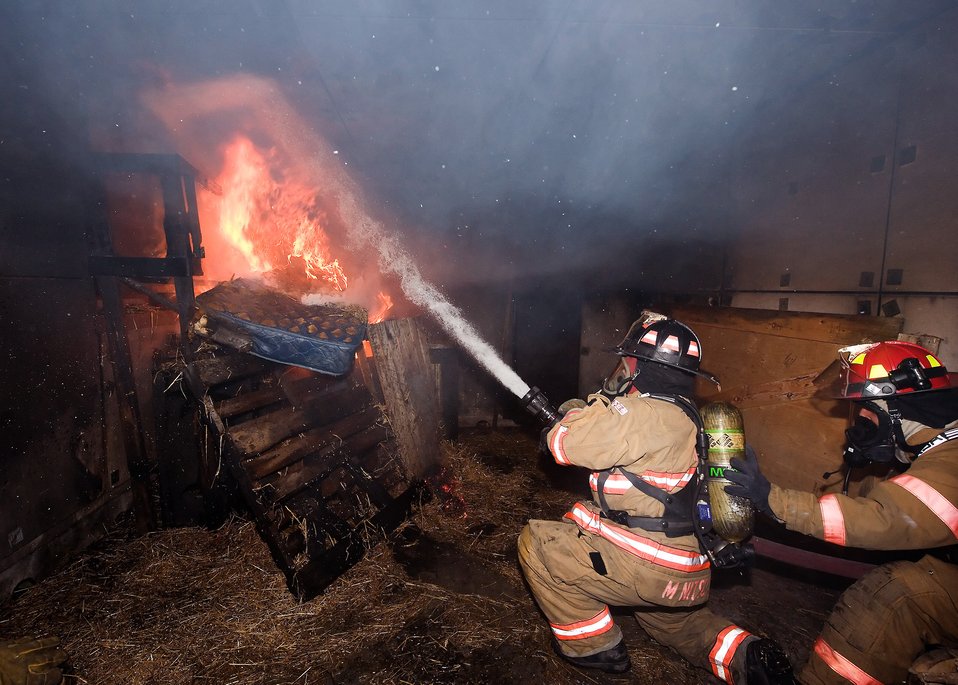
Taking control

Tim Brown, (left) a Dover, Del., firefighter, and Staff Sgt. John Bodnar, a 436th Civil Engineer Squadron firefighter, work to put out a blaze in a building fire exercise Oct. 19, 2010, at the fire training area on Dover Air Force Base, Del. The exercise is one of several exercises this year, which have Dover AFB firefighters working with city firefighters.